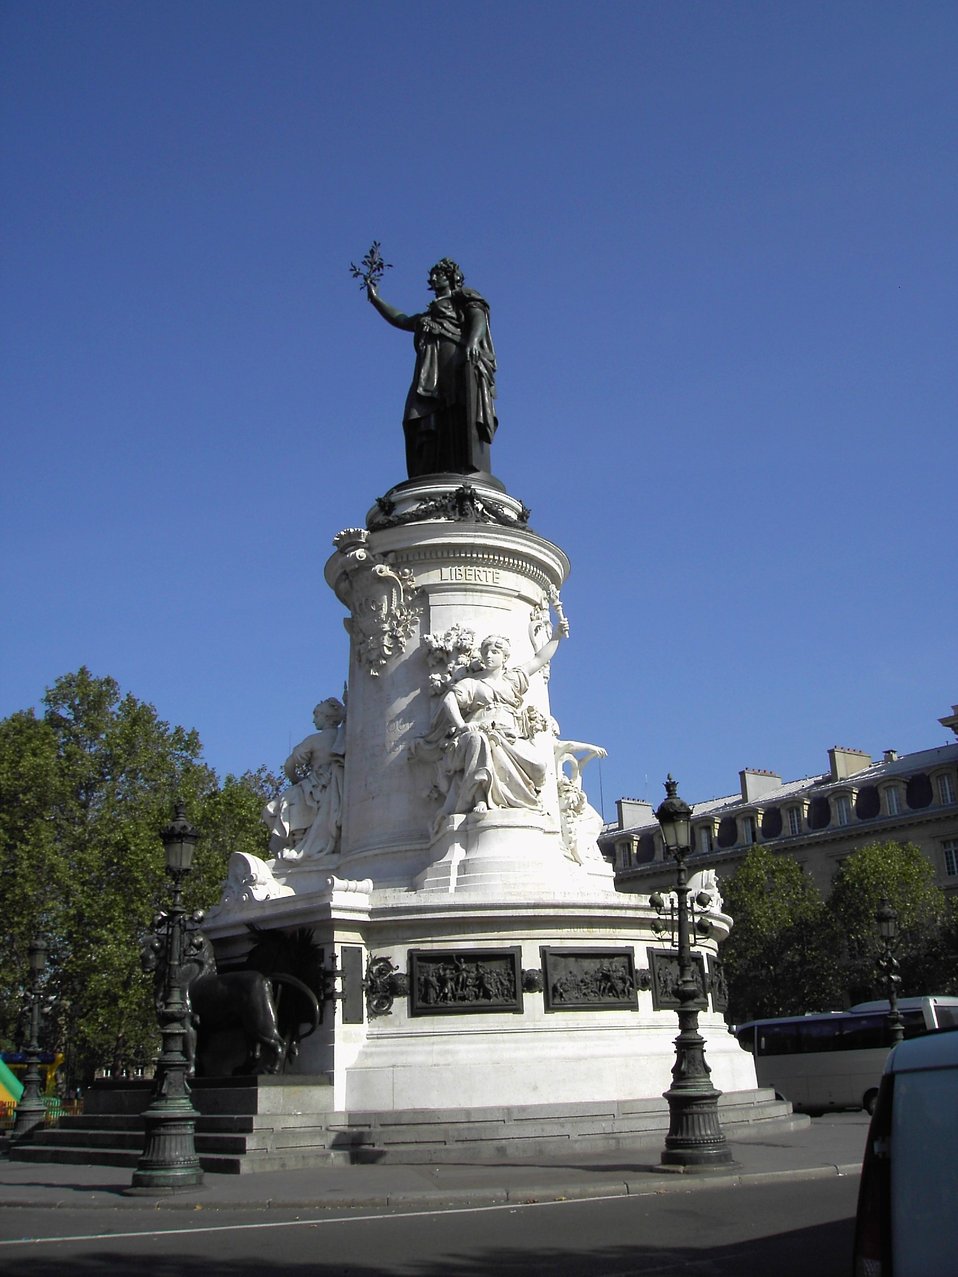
Paris, place de la République